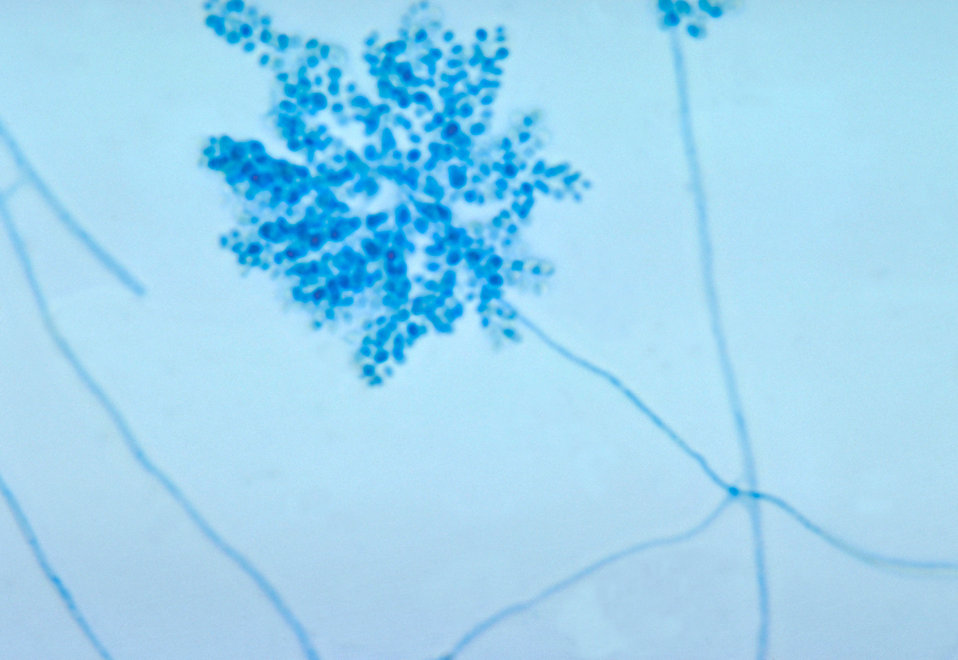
This photomicrograph depicts conidiophores of a Tritirachium sp. fungus.